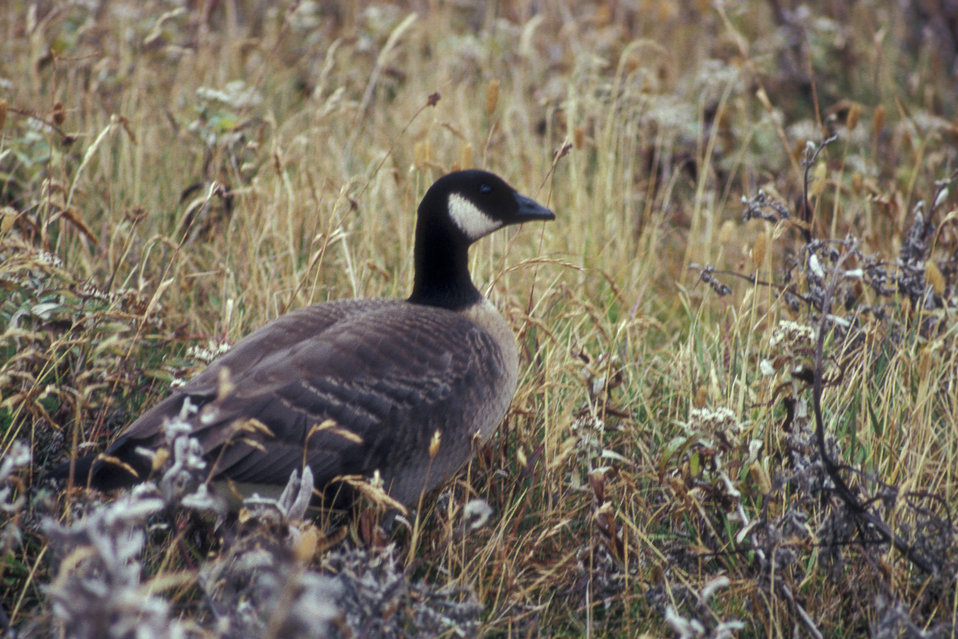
Aleutian Cackling Goose Portrait.